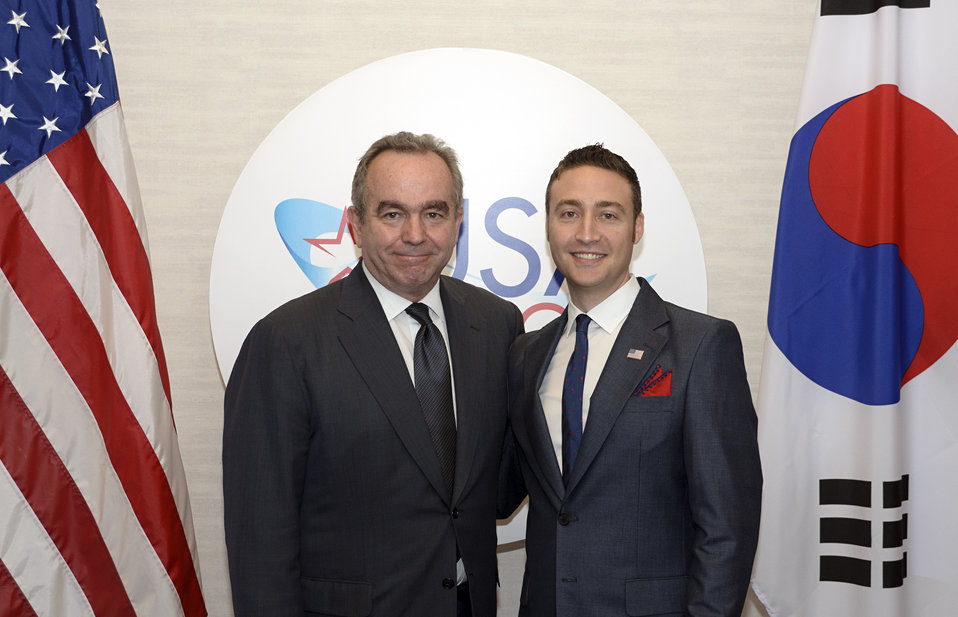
Assistant Secretary Campbell With Andrew Snowhite

Assistant Secretary of State for East Asian and Pacific Affairs Kurt Campbell poses for a photo with Andrew Snowhite, the USA Pavilion CEO in Yeosu, South Korea, on July 14, 2012.